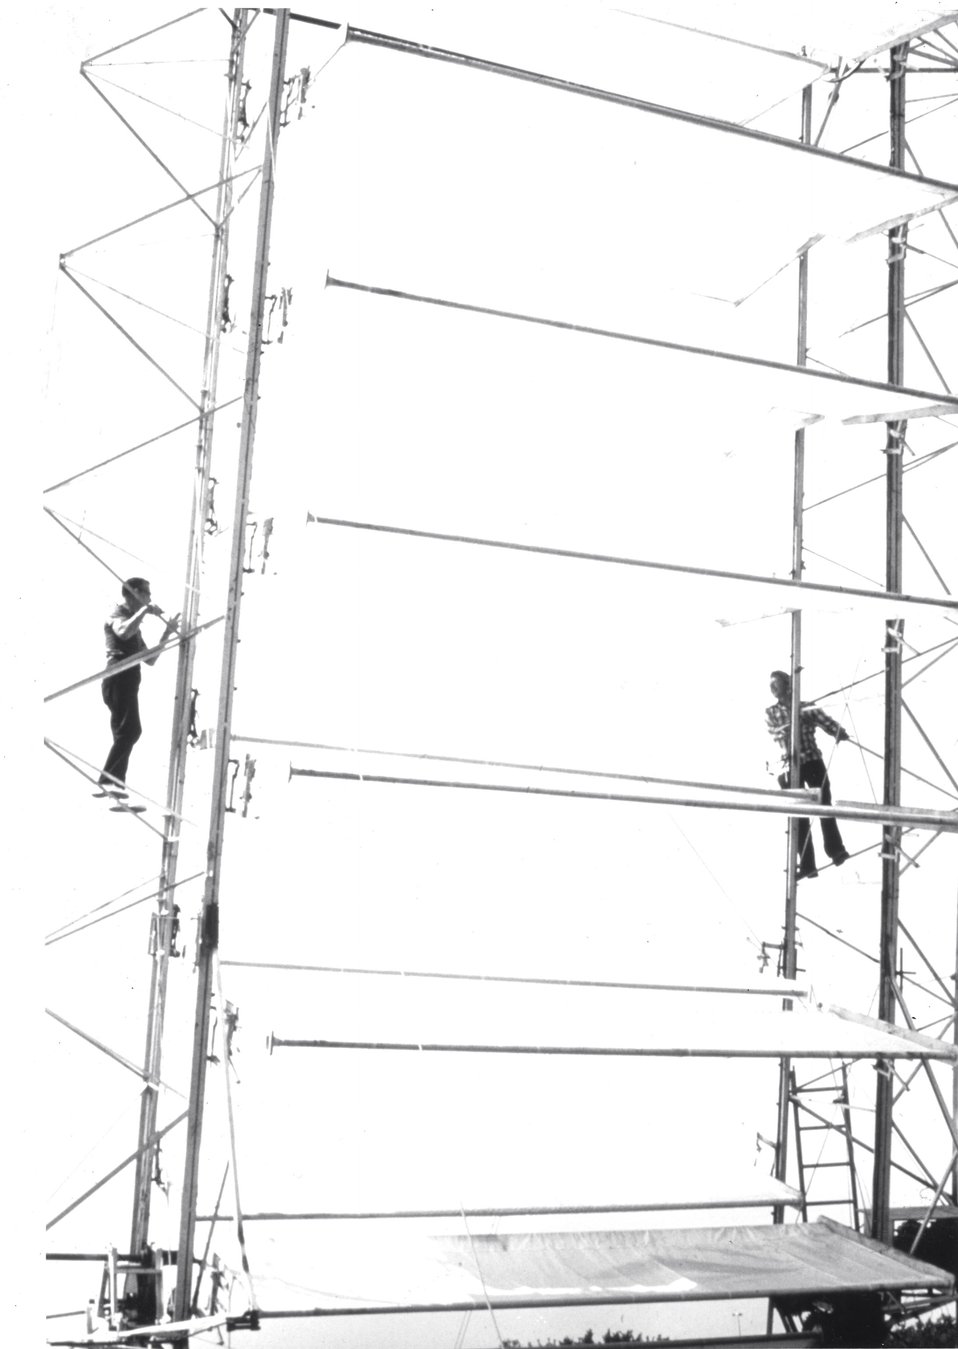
Wind energy machine, invented by Daniel Schneider of Irving, Texas, is being developed under a grant from the Department of Energy's (DOE) Energy-Related Inventions program. c. 1978